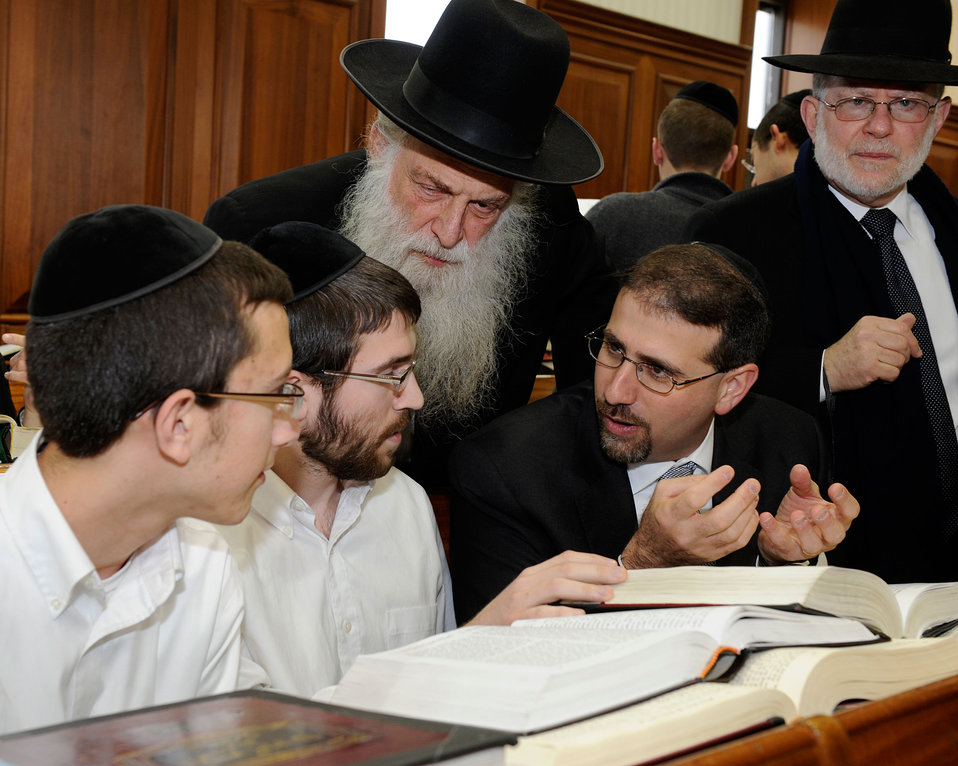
Ambassador Shapiro Visits the Mir Yeshiva

U.S. Ambassador to Israel Daniel B. Shapiro visits the Mir Yeshiva in Jerusalem one of the largest yeshivas in the world with over 6,000 students, 1,000 of whom are from the United States, on January 10, 2012. Ambassador Shapiro is accompanied by Rabbi Aharon Chodosh, Rabbi Nachman Levovitz, Rabbi Binyamin Carlebach and Rabbi Aaron David Davis, the mashgiach ruchani, spiritual supervisor of all the students at the Mir.